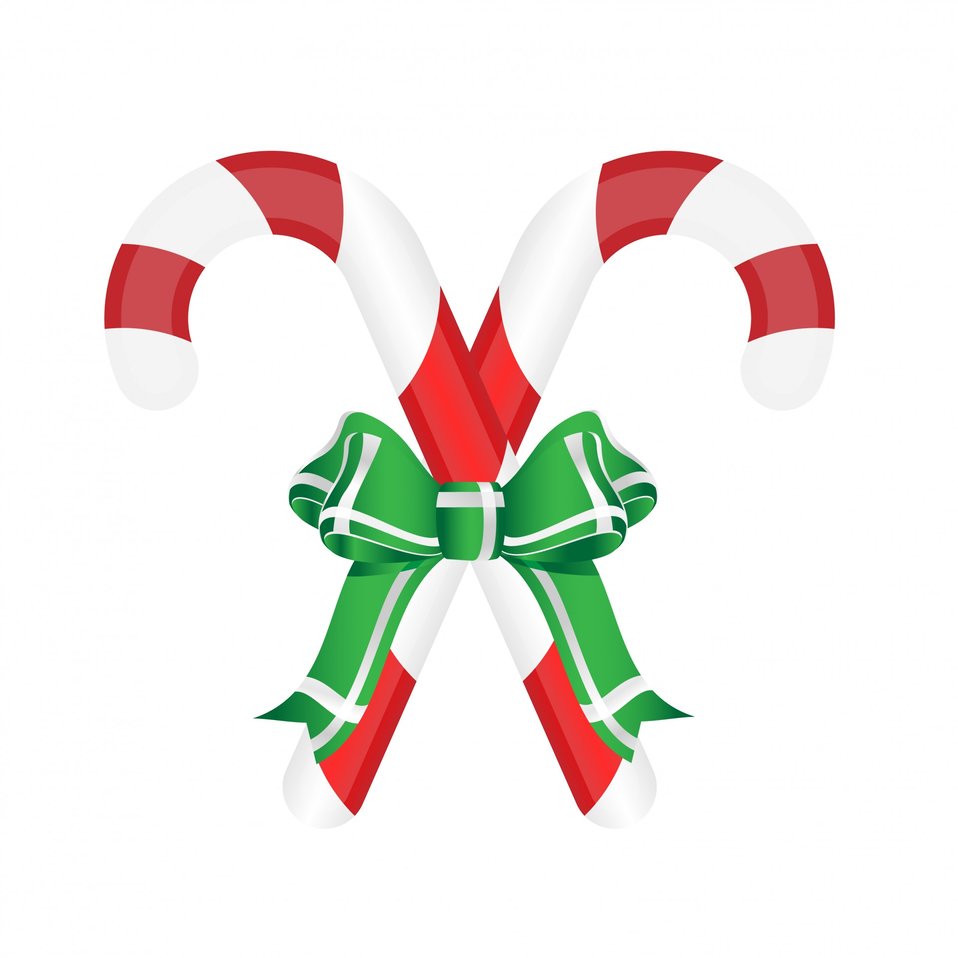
Candy cane ribbon & bow

Two red and white candy canes for christmas tied with green ribbons and bow.